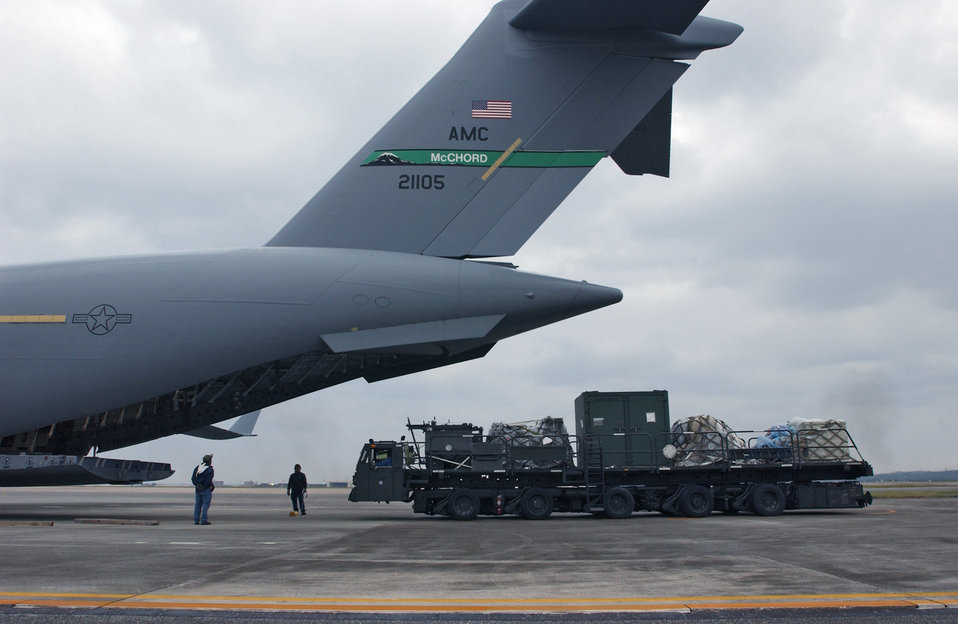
Equipment for Banda Ache

KADENA AIR BASE, Japan -- Airmen load a C-17 Globemaster III with pallets of equipment here bound for Banda Ache, Indonesia, Jan. 9. The 615th Air Mobility Operations Group, from Travis Air Force Base, Calif., will provide aircraft support for the ongoing humanitarian relief in wake of the tsunami disaster. The Airmen are assigned to the 733rd Air Mobility Squadron here.